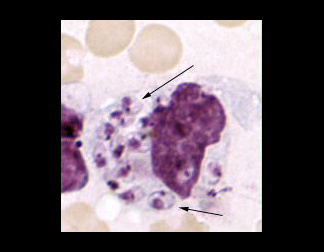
This photomicrograph of a skin specimen revealed parasitic Leishmania tropica amastigotes inside a macrophage.